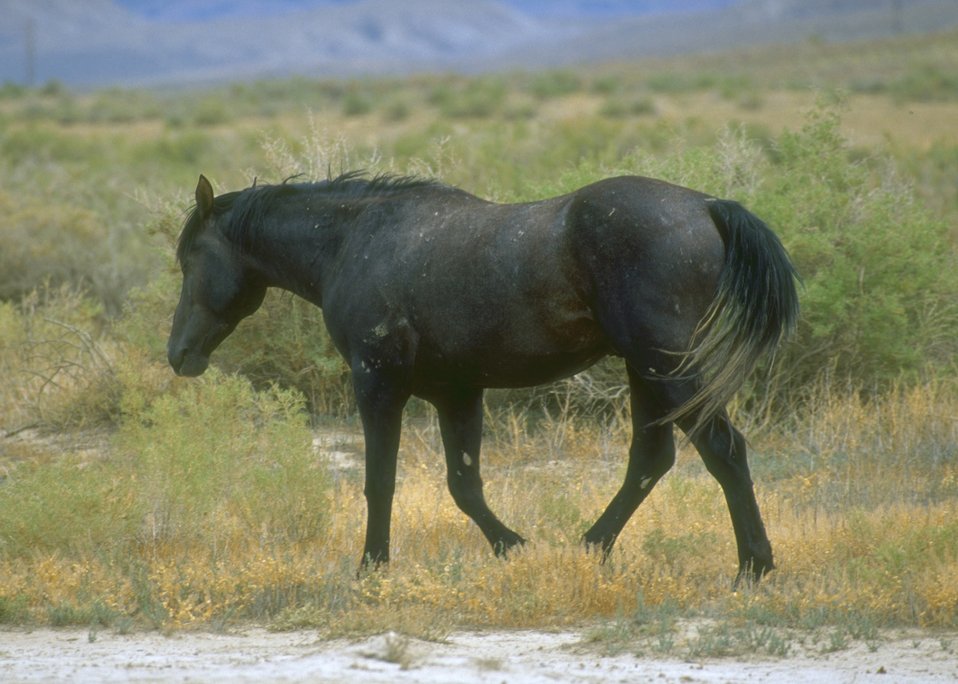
Wild horses, Rock Springs Field Office.